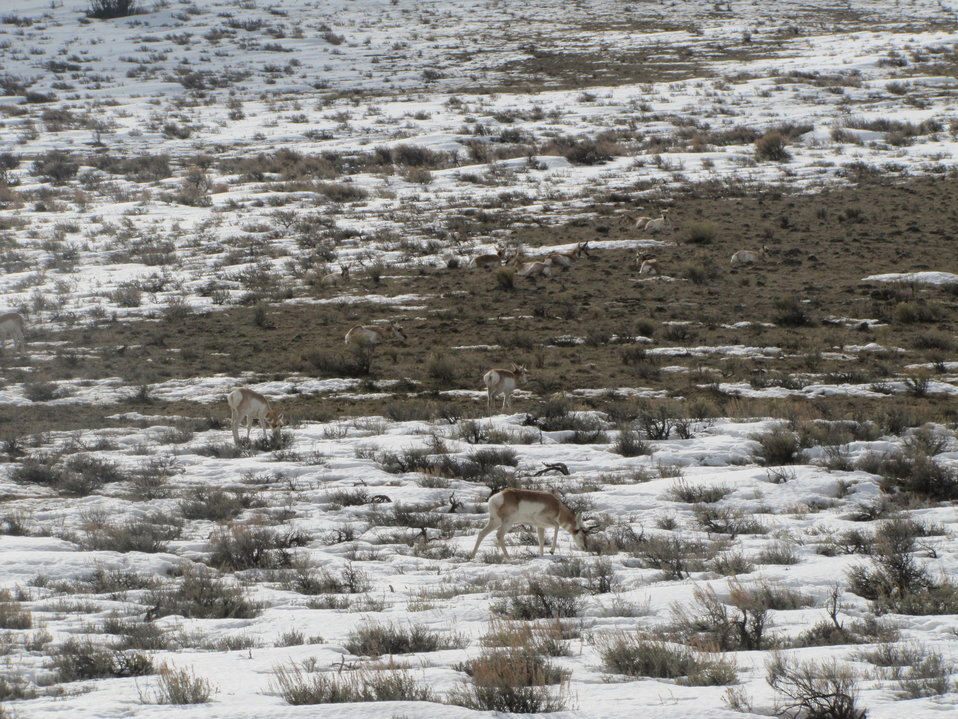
Camouflaged

A group of pronghorns blend in with the current conditions. Pronghorns are not well suited to overwintering in the Jackson valley. However, the camouflaging here is an added bonus to defense against predators.